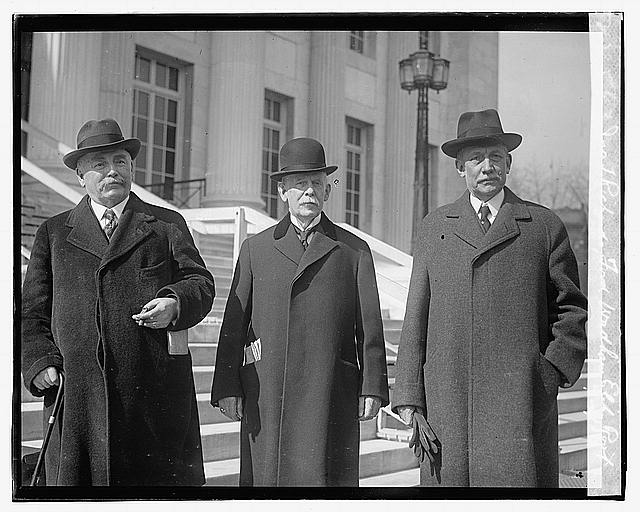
Elihu Root, U.S. Secretary of State

Elihu Root, pictured on right, U.S. Secretary of State 19 July 1905 to 27 January 1909.

from lcweb2.loc.gov/cgi-bin/query/h?pp/PPALL:@field(NUMBER @ba...